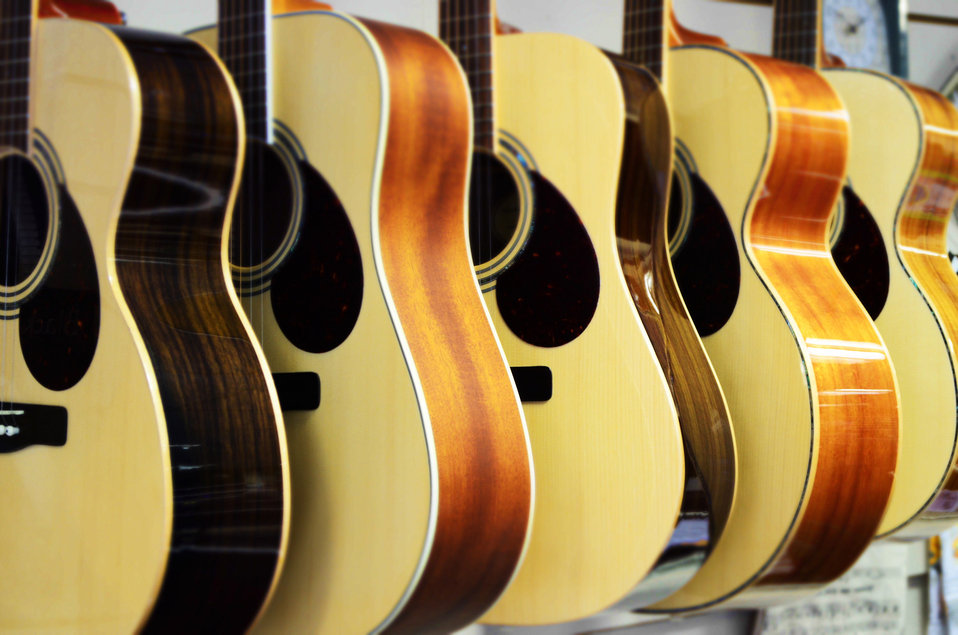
New guitars.